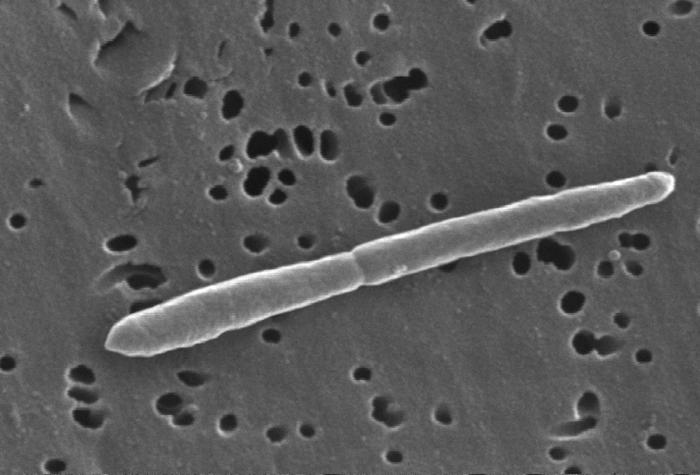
This scanning electron micrograph (SEM) depicted a Gram-negative Sebaldella termitidis bacterium, which through the process of cell division, was in the process of becoming two separate organisms.